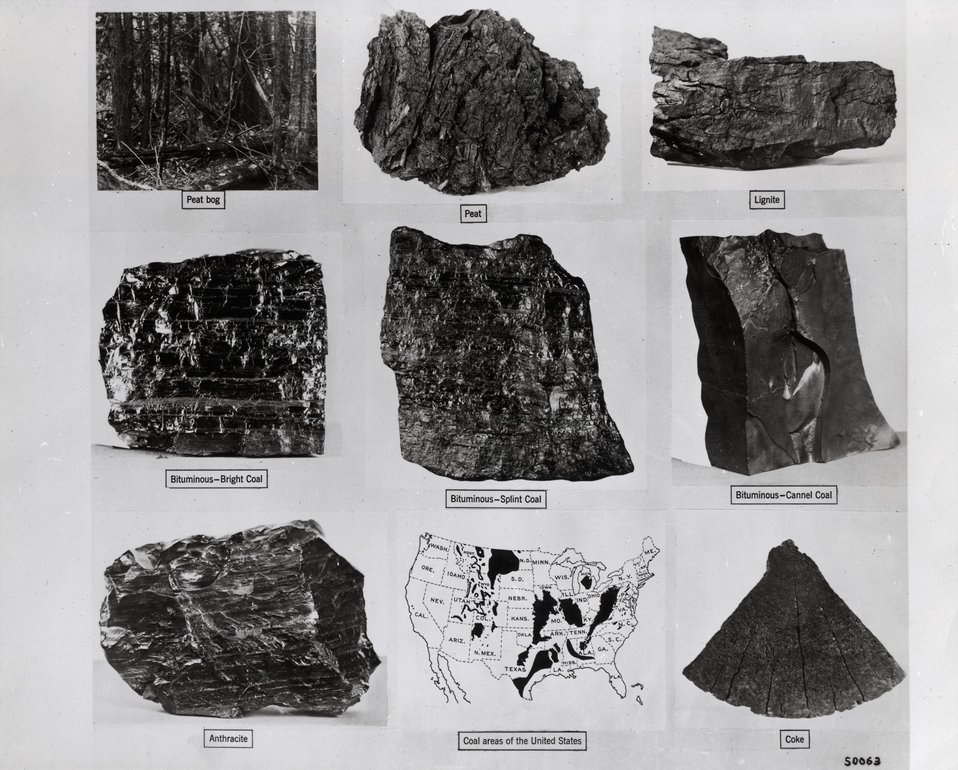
Miscellaneous -- Composite photograph of coals from peat, together with coke, and a map of coal-bearing areas of the United States.